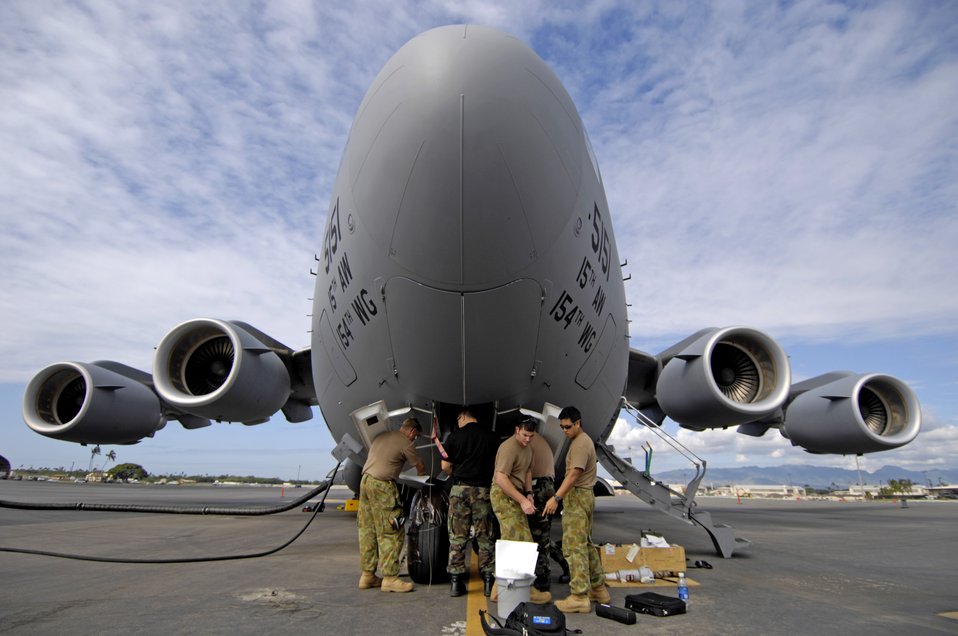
USAF Maintainers Give Australians a Peek Into Their Future

U.S. and Australian maintainers work on a C-17 Globemaster III nose steering actuator at Hickam Air Force Base, Hawaii Oct. 19, 2006. Maintainers from Amberly Royal Australian Air Force Base's 36th Squadron are working along side their U.S. Air Force counter parts from the 15th Maintenance Group learning the ins and outs of the Globemaster III in preparation for the delivery of their first C-17.